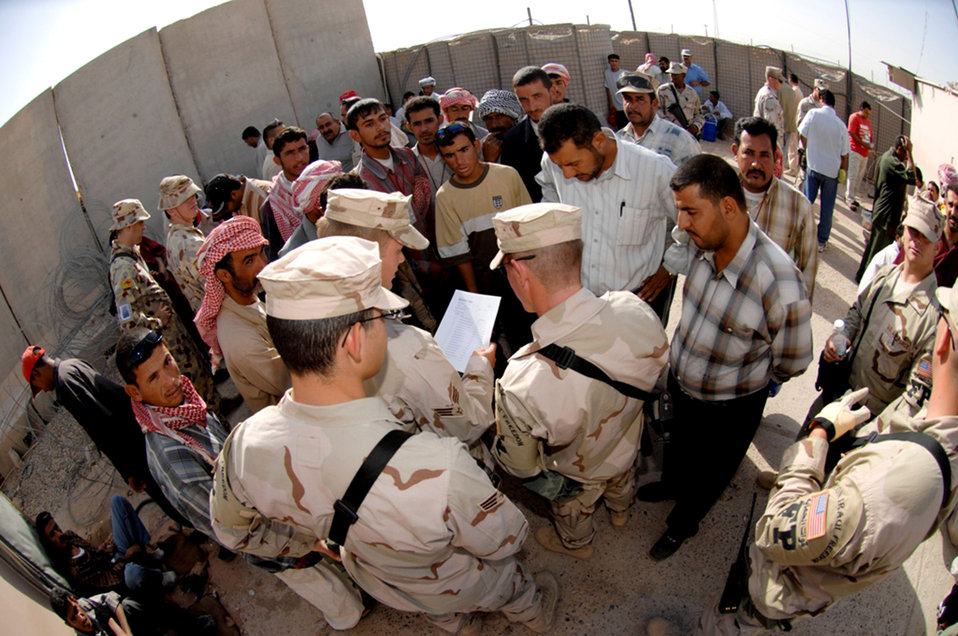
Keeping the compound safe

Members of the 407th Expeditionary Security Forces Squadron's Force Protection Flight at Ali Air Base, Iraq, review a list and hand out badges to local nationals waiting to be escorted on base to work. This process is done every day to ensure the safety and security of the bases personnel and assets. FPF Airmen monitor local and third country nationals to detect suspicious activity, augment security forces during increased force protection conditions, and monitor and maintain installation security measures.